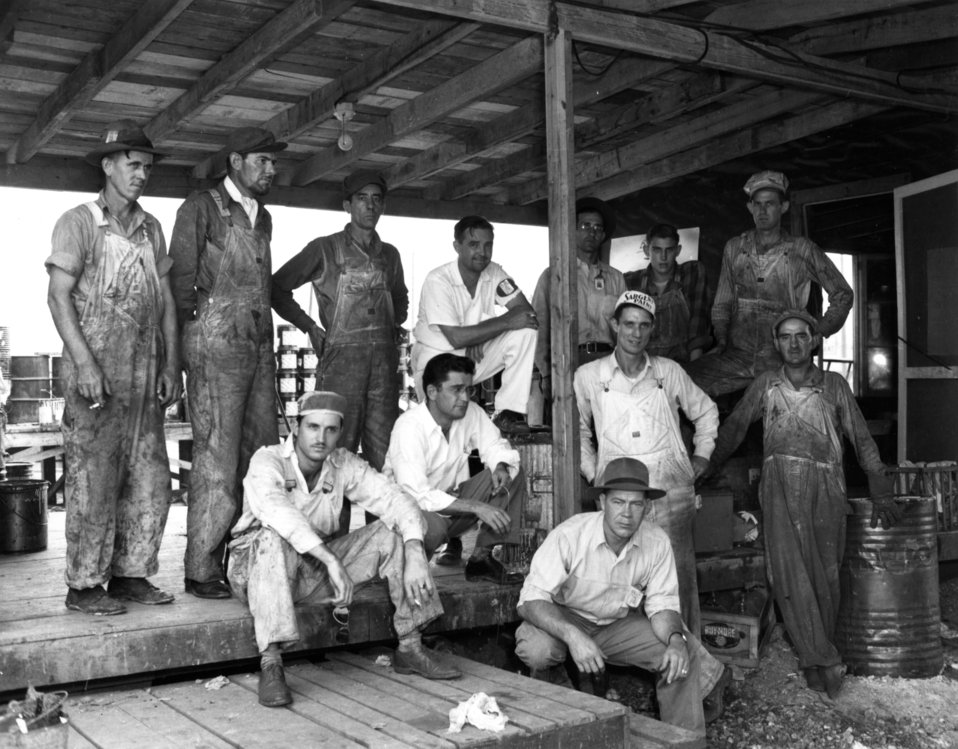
Business activity at Oak Ridge